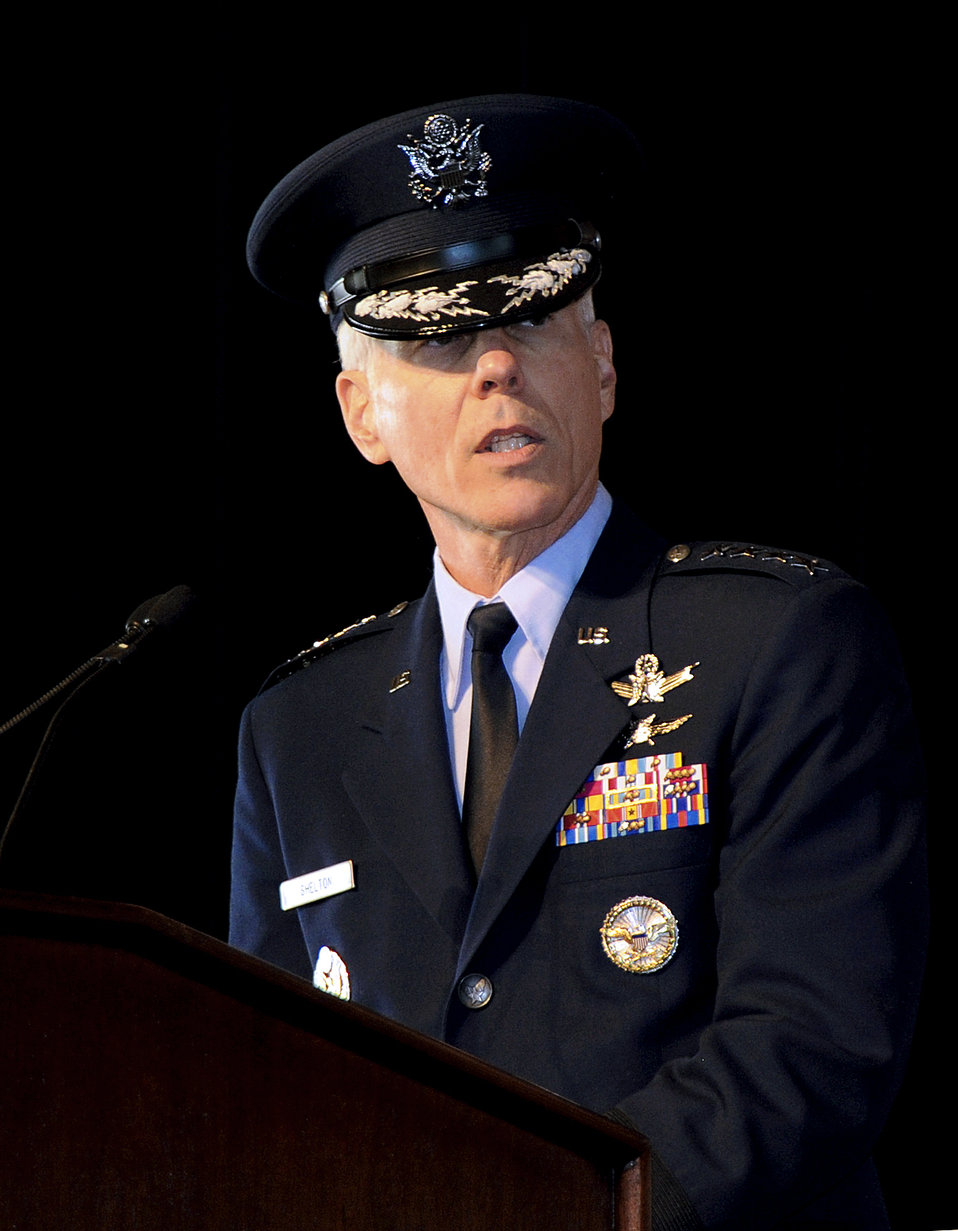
AFSPC commander

Gen. William L. Shelton, the commander of Air Force Space Command, addresses those present during the AFSPC change of command Jan. 5, 2011, at Peterson Air Force Base, Colo.